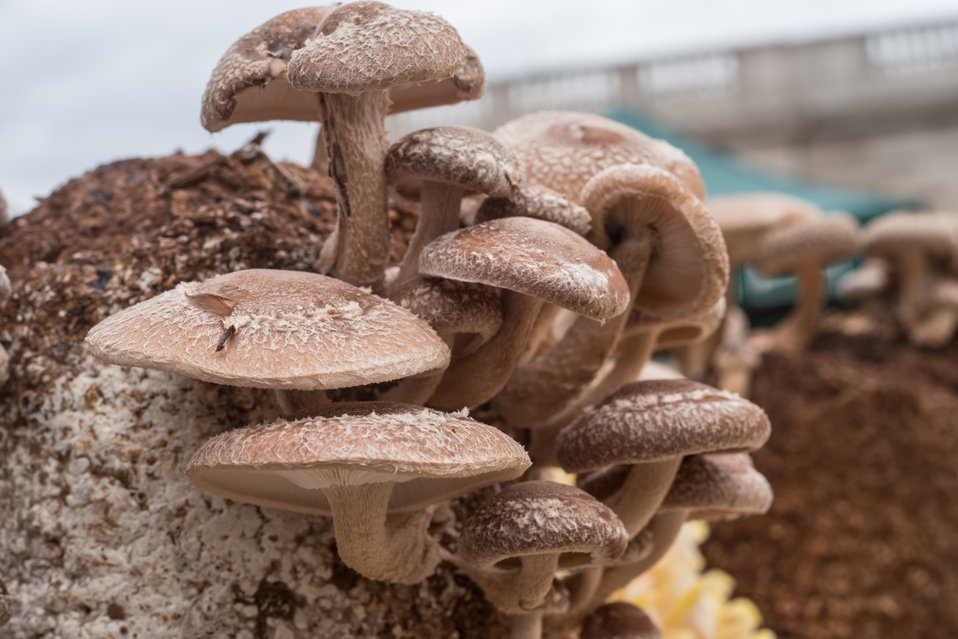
Shitake mushrooms growing on sawdust and cereal log, on display at the U.S. Department of Agriculture (USDA) farmers markets and Harvest Festival at the USDA Whitten Building east parking lot in Washington, DC, on Friday, November 22, 2013.